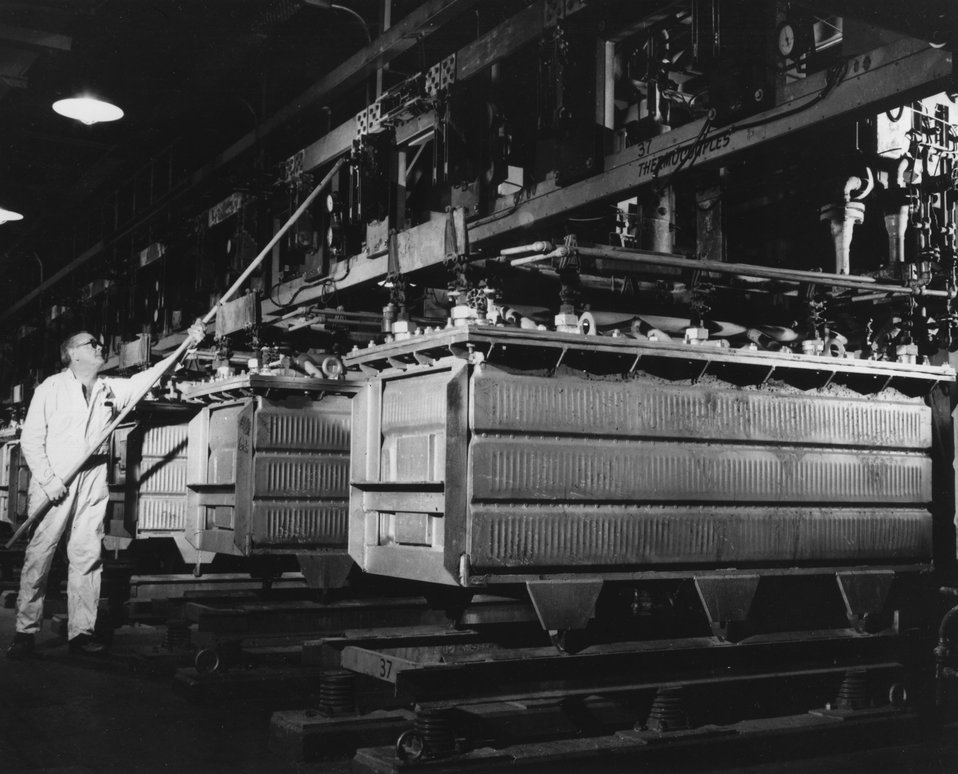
The Energy Research and Development Administration maintains a uranium feed material production facility at its Paducah (Kentucky) Gaseous Diffusion Plant. c. 1972